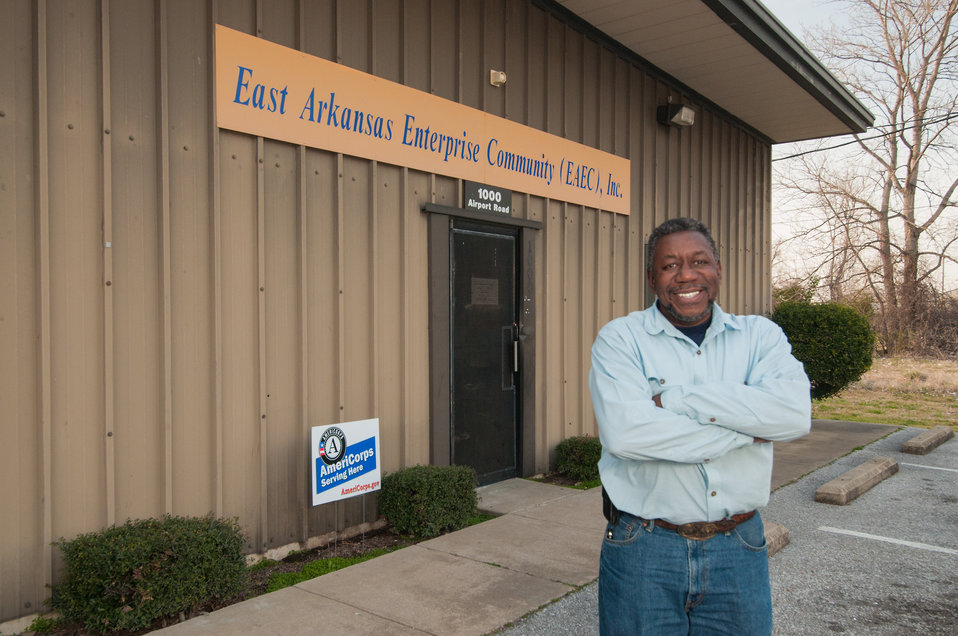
U.S. Department of Agriculture (USDA) Arkansas Strike Force Leader Charlie Williams stands in front of the East Arkansas Enterprise Community, (EAEC) Inc. in Forrest City, AR on Mar. 4, 2013. The EAEC is a beneficiary of the Seeds of Change Implementation Plan organized by USDA in partnership with Heifer International (an International organization whose mission is to work with communities to end hunger and poverty and care for the Earth) and various for-profit and non-profit organizations. The scope of the plan is to use sustainable agriculture to build food systems in the Arkansas Delta. The program has evolved into the Arkansas Delta Seeds of Change (ADSOC). The EAEC is one of 42 community-based organizations located in high poverty areas in the U.S. to benefit from the ADSOC Initiative.